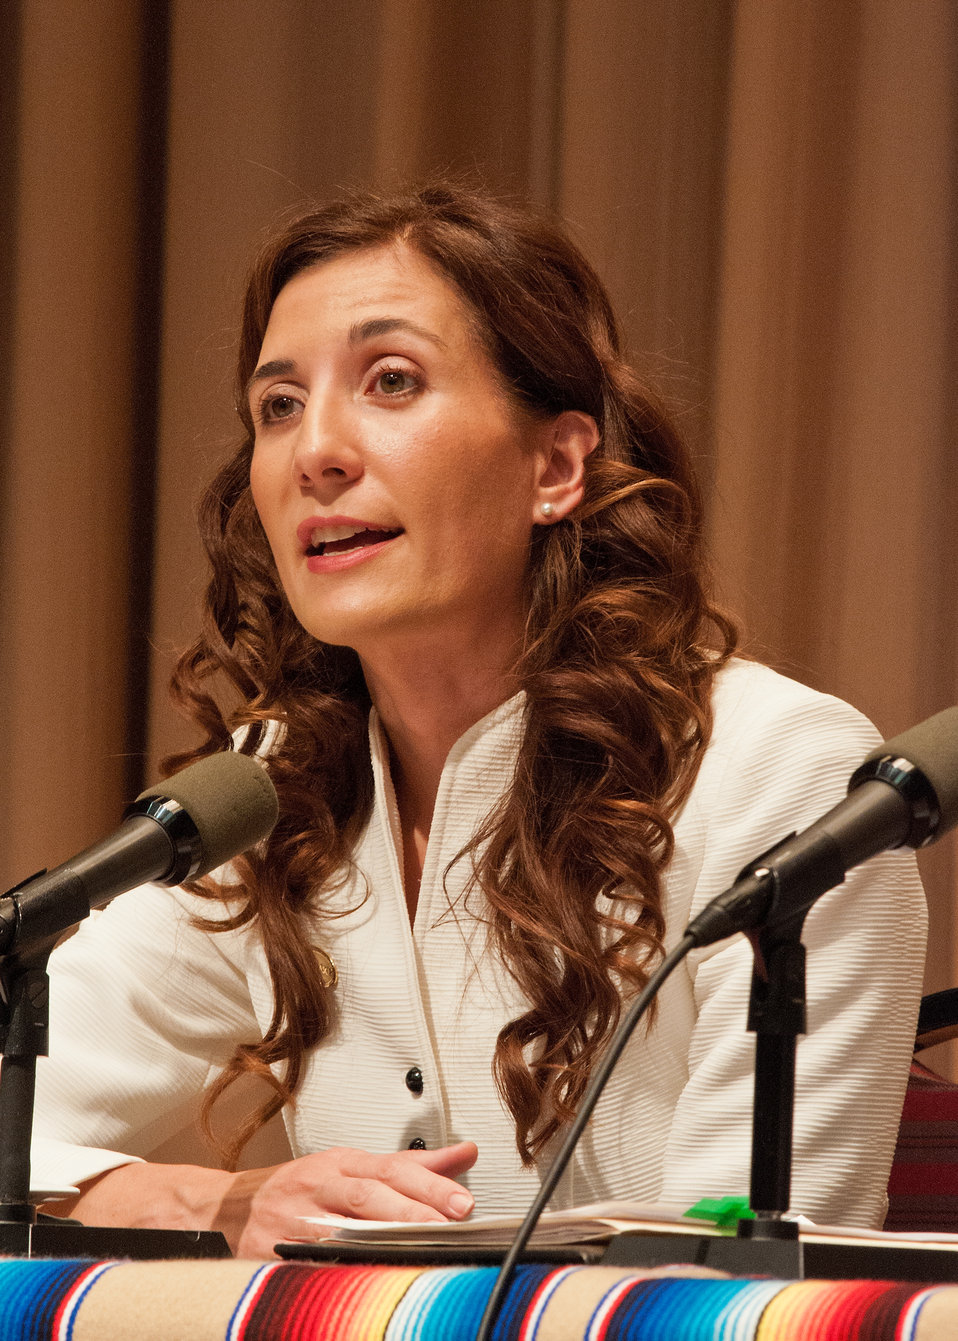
Agriculture Acting Deputy Under Secretary for Civil Rights Lisa Pino was a keynote speaker on a panel discussion on Education, Economics and Nutrition at the U. S. Department of Agriculture (USDA) 2012 Hispanic Heritage Month in Washington, D.C. on Thursday Sept. 20, 2012. Deputy Under Secretary Pino spoke about how nutrition relates to the Hispanic American community.